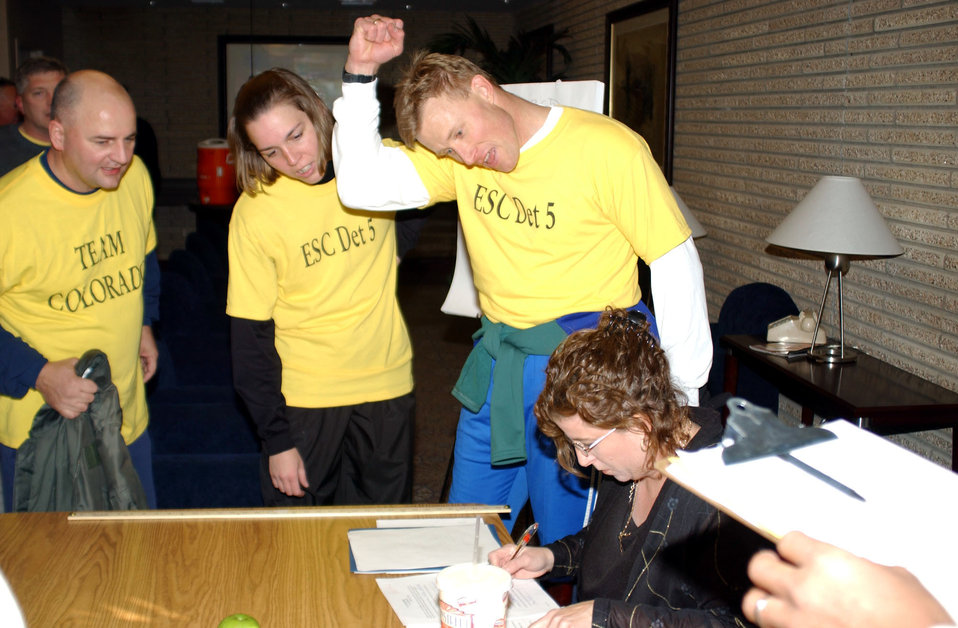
'The Amazing Race'

PETERSON AIR FORCE BASE, Colo. -- Lt. Col. Brian Shimel celebrates as Staci Waters grades his team's Air Force trivia test during a special fitness competition. Space and Missile Systems Center Detachment 11 and Electronic Systems Center Detachment 5 airmen designed a course that took teams around Peterson to compete in a wide variety of challenges. Six teams participated in the race based on the television reality show,